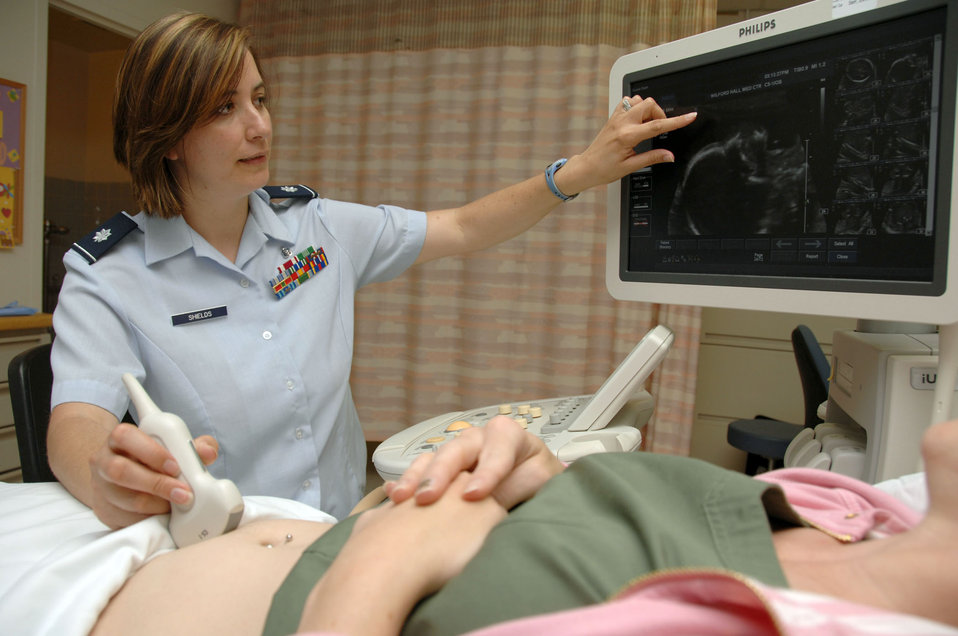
Wilford Hall conducts study to reduce premature births

Lt. Col. (Dr.) Andrea Shields performs an ultrasound on a patient June 21, 2010 in the Wilford Hall Medical Center at Lackland Air Force Base, San Antonio, while explaining the benefits of her pre-term birth study. Doctor Shields is a maternal-fetal medicine specialist.